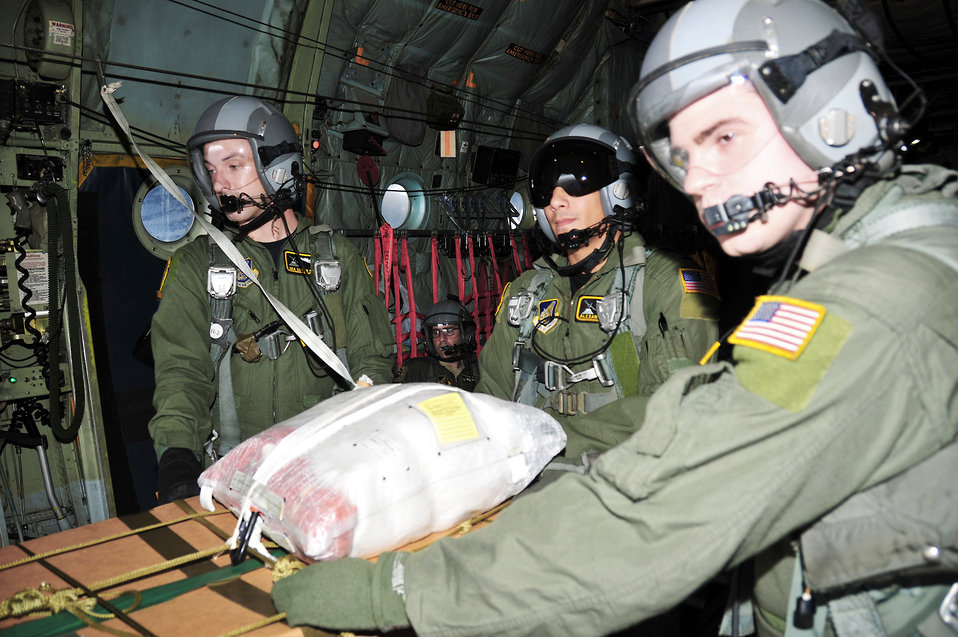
Airmen drop donated goods to islanders

Senior Airman Dustin Deveaux (left to right), 1st Lt. Alexander Johns and Airman 1st Class Jason Barbieri prepare to drop a bundle of donated goods out the back of a C-130 Hercules to Chuuk Island during Operation Christmas Drop Dec 16, 2009. Operation Christmas Drop is a non-profit organization sponsored by volunteers from Andersen Air Force Base and the local Guam community.